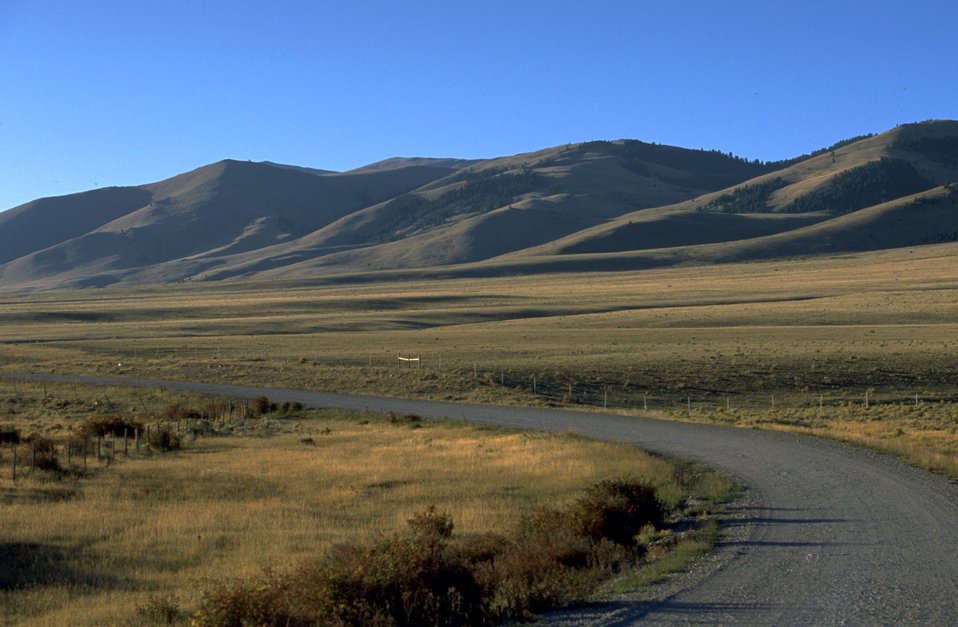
Centennial Valley road with mountains in the background